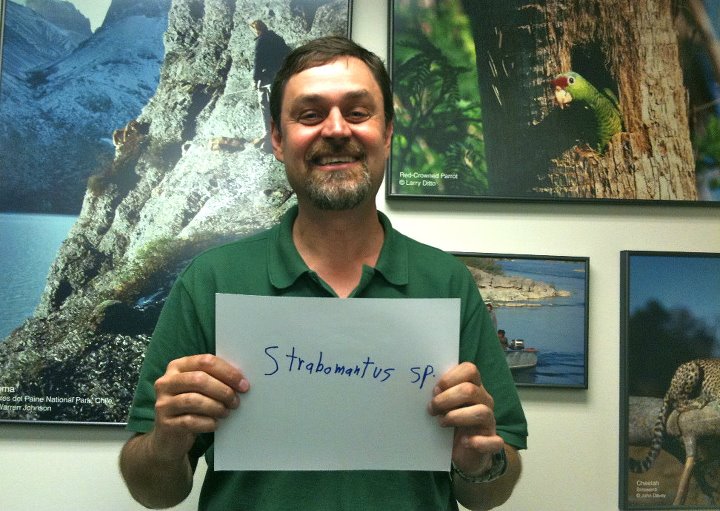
Thomas Leuteritz, 'Strabomantus sp.'

International Affairs participates in FFI's In Our Hands campaign